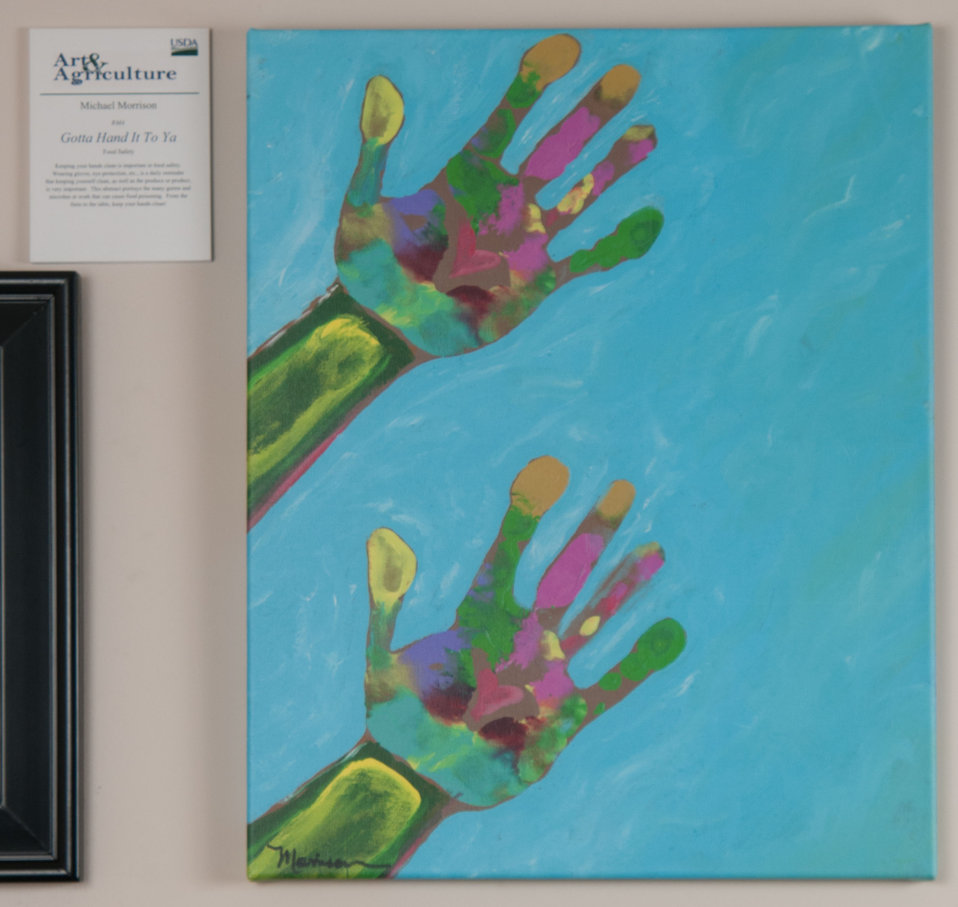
Online Viewer's Choice entries of the 2013 Art & Agriculture, Tuesday, July 9, 2013, in the South Building, Washington, D.C. Themes were expressed by employees from across the department and the contest was open to full-time and part-time USDA employees. Winning artwork will be displayed till the end of the year. U.S. Artistic expression is a creative outlet that is vital for an individual to grow and develop.